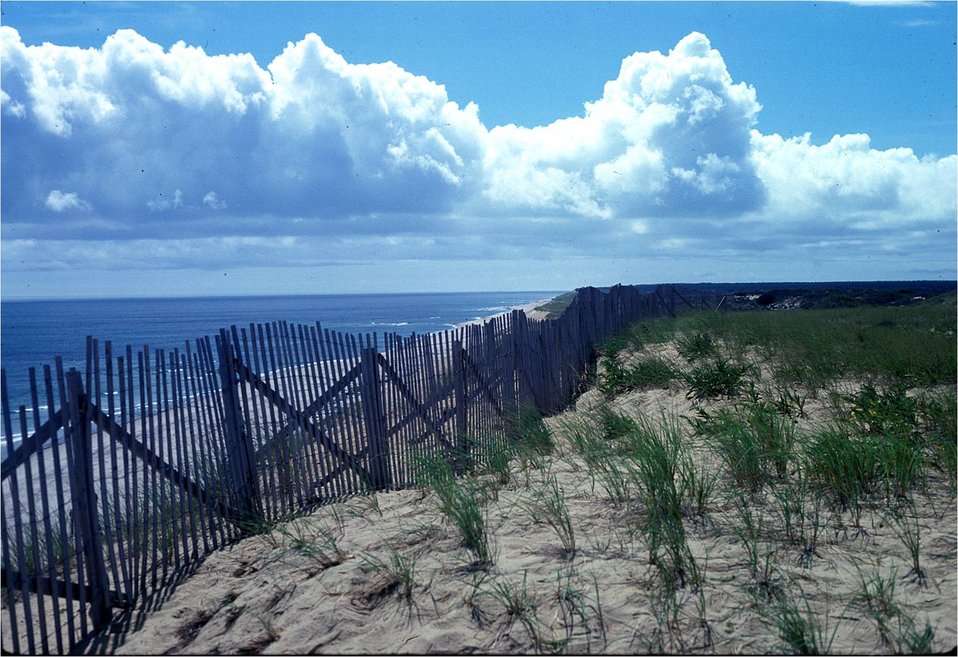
Cape Cod National Seashore near Wellfleet, MA